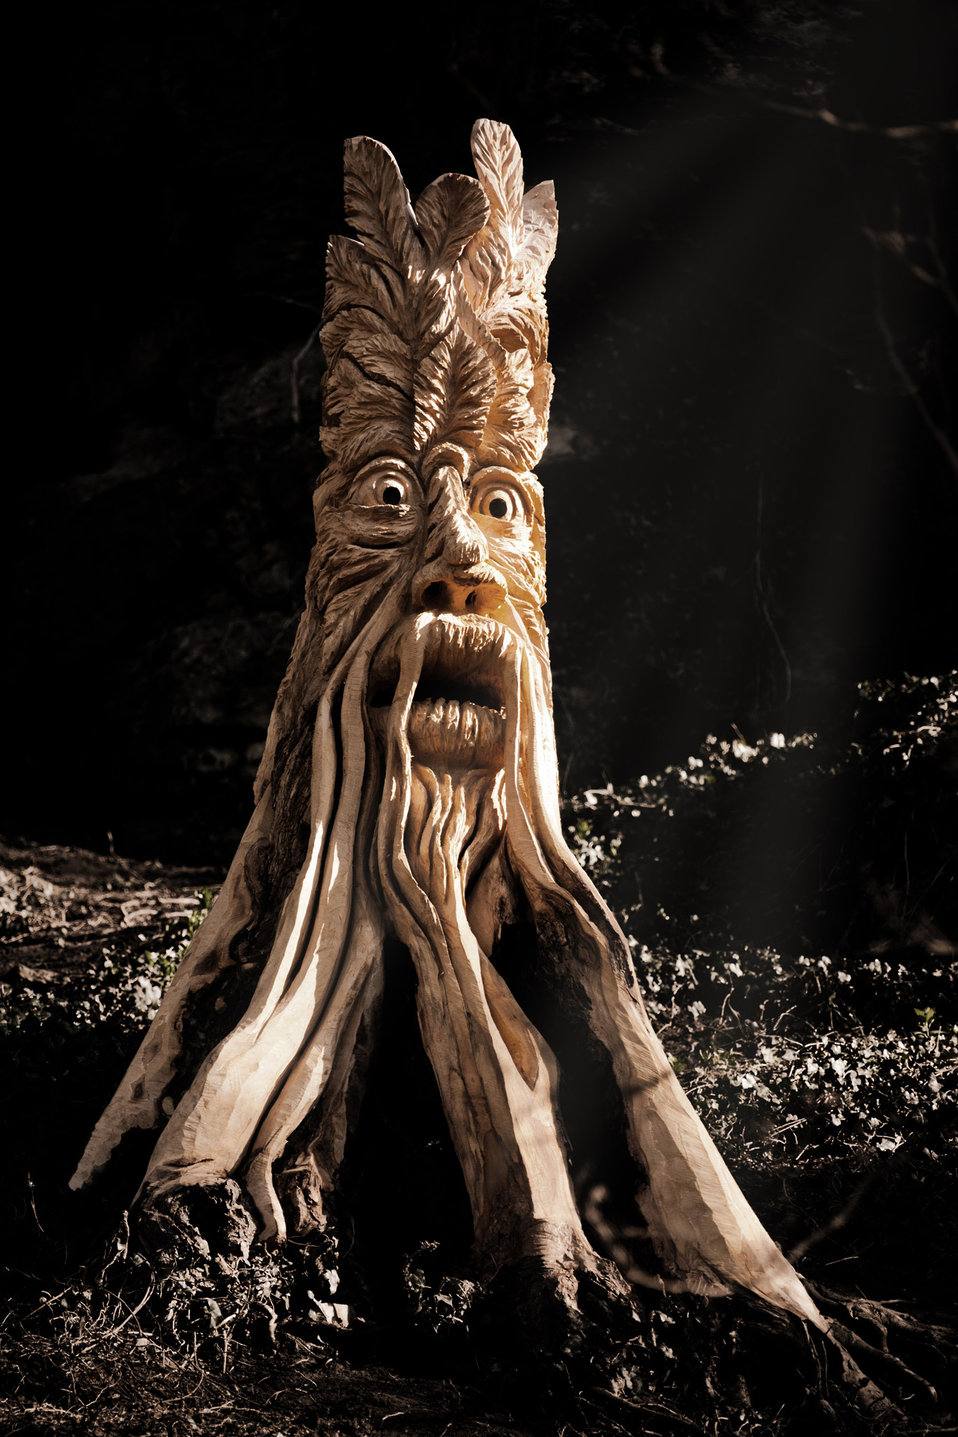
Stump sculpture

Stump carved into a woodland creature.